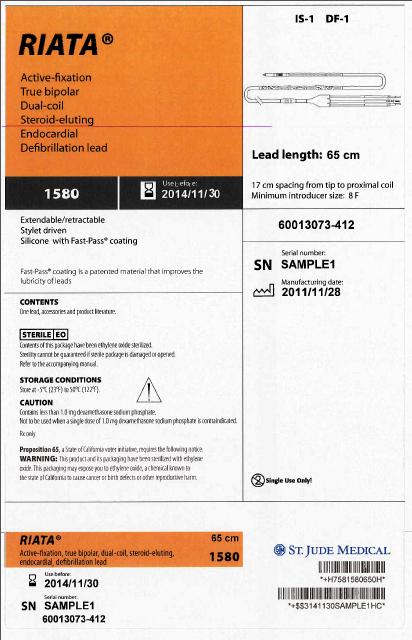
RECALLED - Silicone Endocardial Defibrillation Leads

December 14, 2011 - Product Recall - FDA Classifies Voluntary Physician Advisory Letter on Riata and Riata ST Silicone Defibrillation Leads as Class I Recall (URGENT MEDICAL DEVICE ADVISORY).